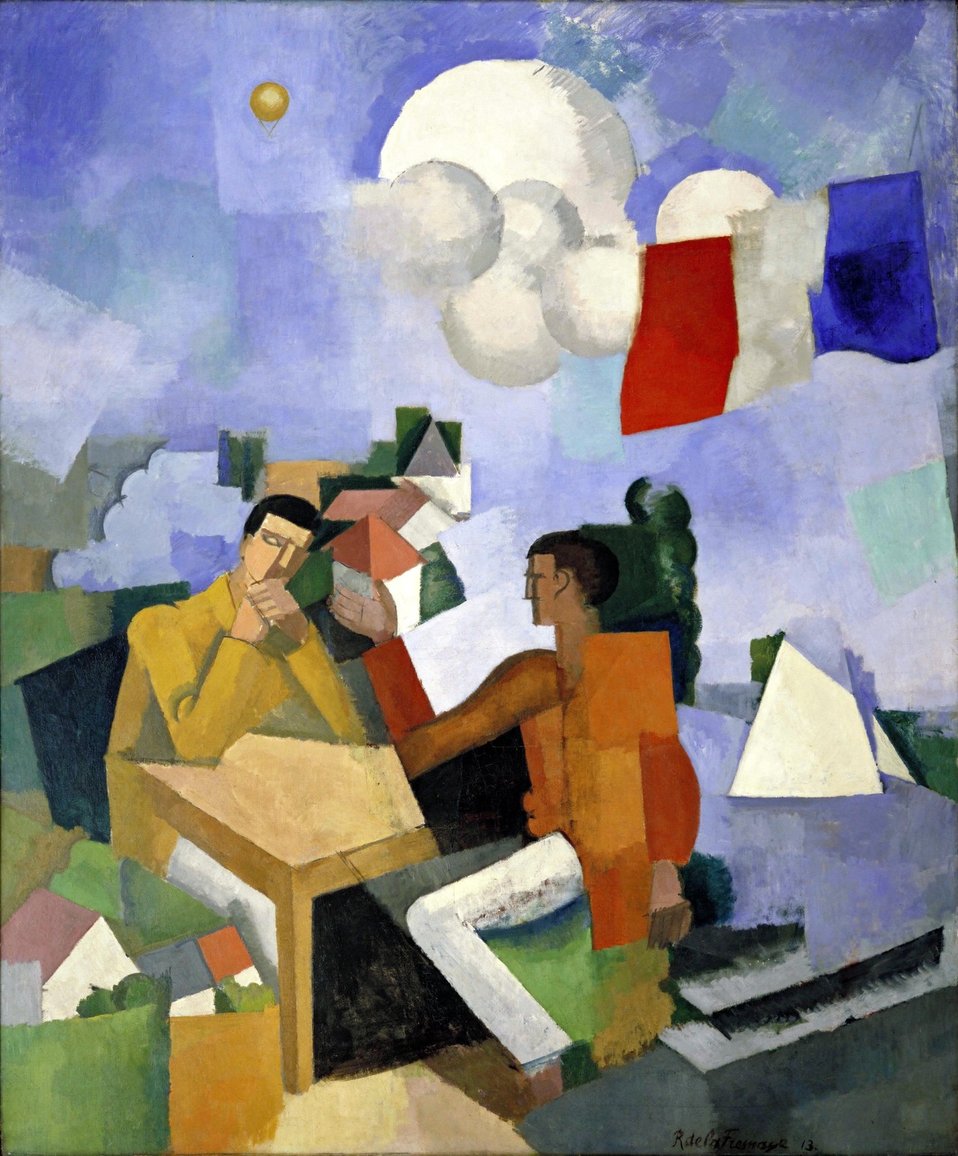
Photograph of The Conquest of the Air, 1913. Oil on canvas by en:Roger de La Fresnaye in the public domain. en:Museum of Modern Art, New York.